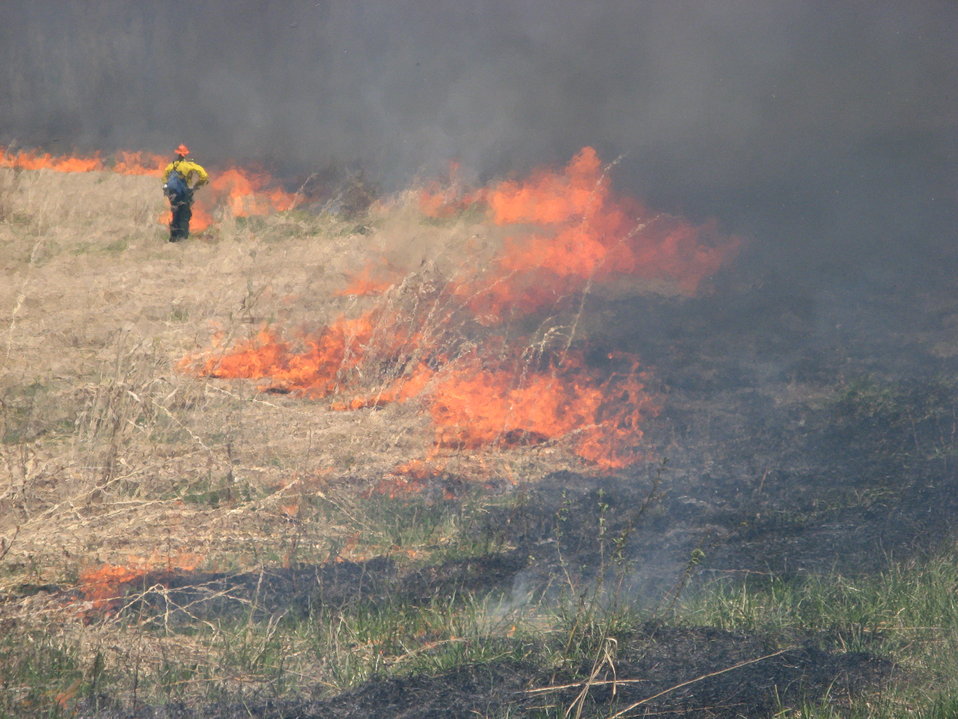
Controlled burn at Iroquois National Wildlife Refuge

Alabama, New York: Northeast region fire planner Rick Vollick lights the interior of a controlled burn at Iroquois National Wildlife Refuge to maintain habitat for grassland breeding birds. The burns keep woody plants from taking over the field and rejuvenate the growth of grasses.